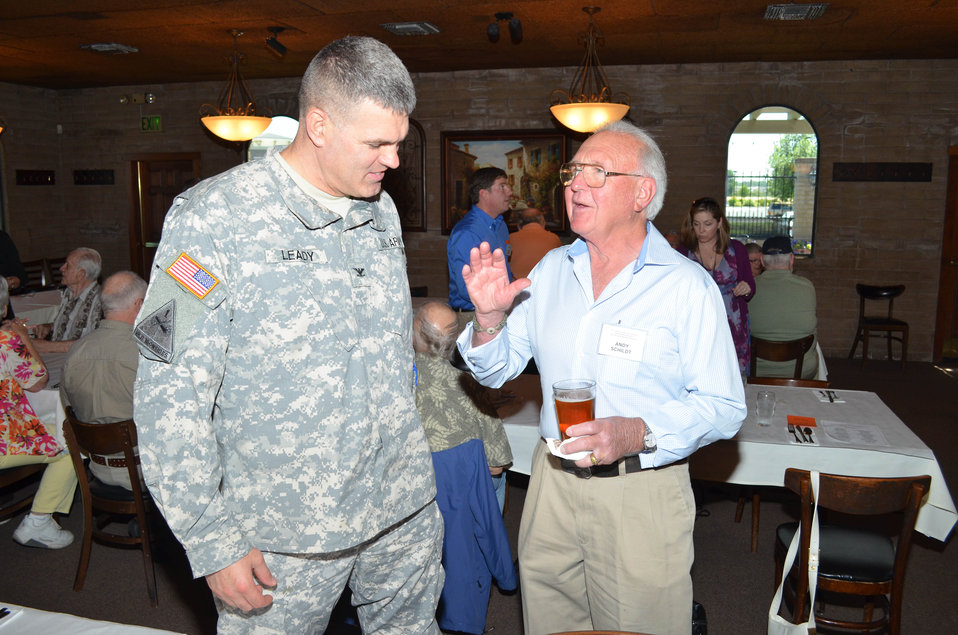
32nd annual retiree luncheon

Col. Bill Leady, commander of the U.S. Army Corps of Engineers Sacramento District, talks with retired district employee Andy Schildt before the district’s 32nd annual retiree luncheon at Club Pheasant in West Sacramento, Calif., May 23, 2013. The luncheon allows retired members to keep in touch and stay up to date on what the district is doing.